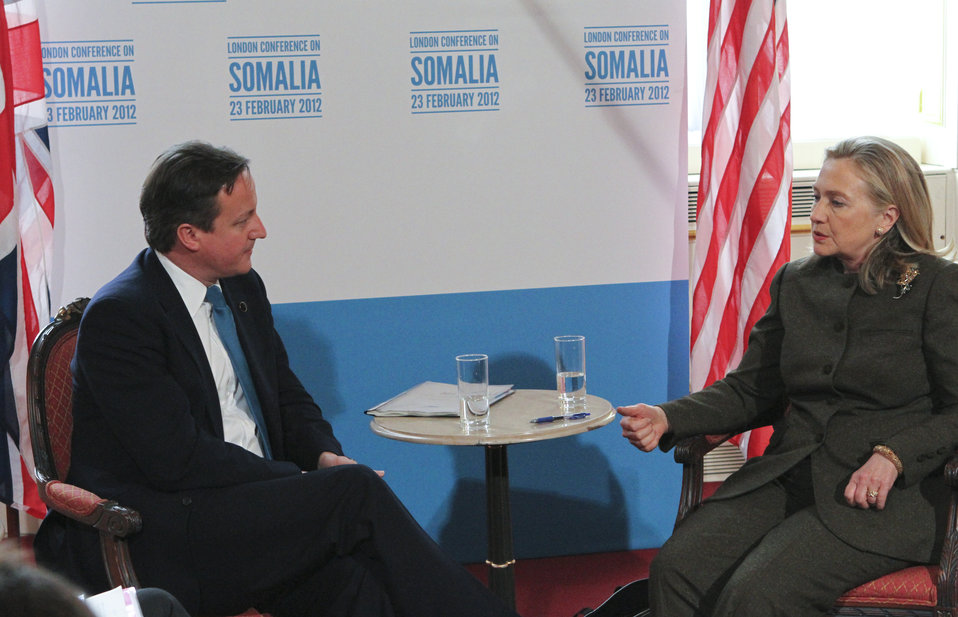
Secretary Clinton Meets With UK Prime Minister Cameron

U.S. Secretary of State Hillary Rodham Clinton meets with UK Prime Minister David Cameron on the margins of the London Conference on Somalia on February 23, 2012.